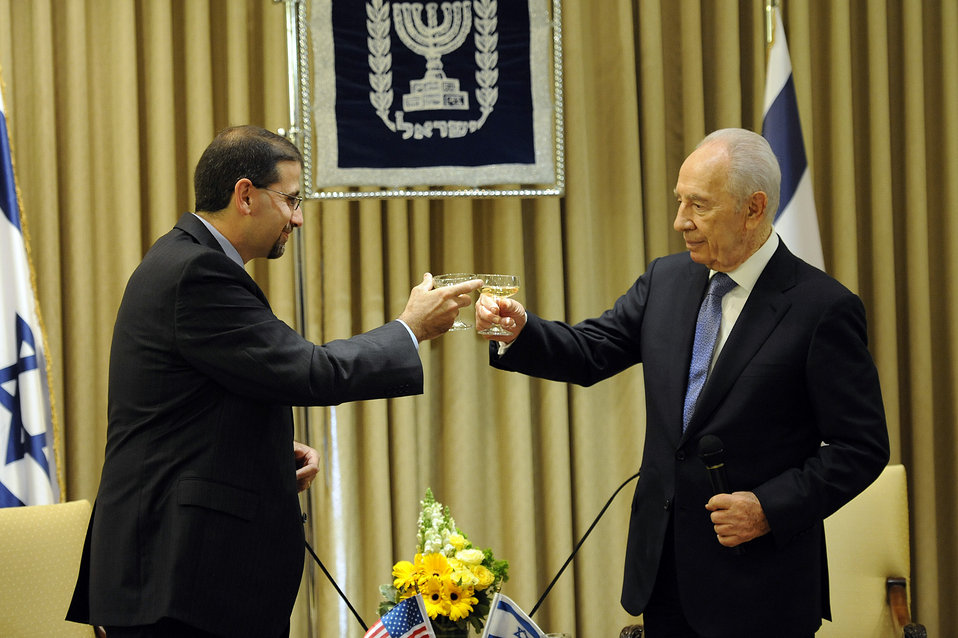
Ambassador Shapiro Meets With Israeili President Peres

U.S. Ambassador to Israel Daniel B. Shapiro meets with Israeli President Shimon Peres after presenting his credentials at the President's residence in Jerusalem on August 3, 2011.